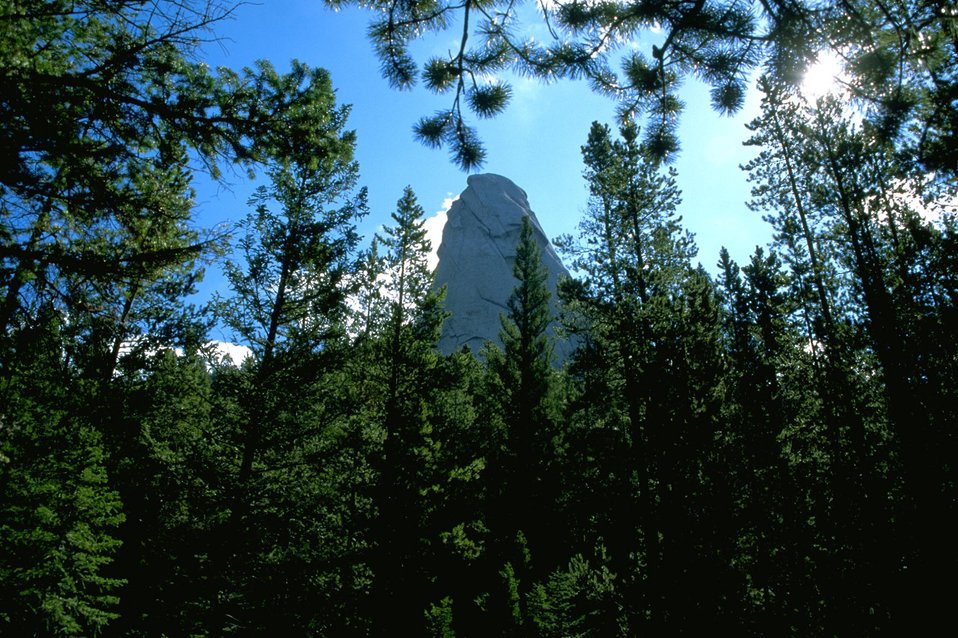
Rock formation towering over the trees